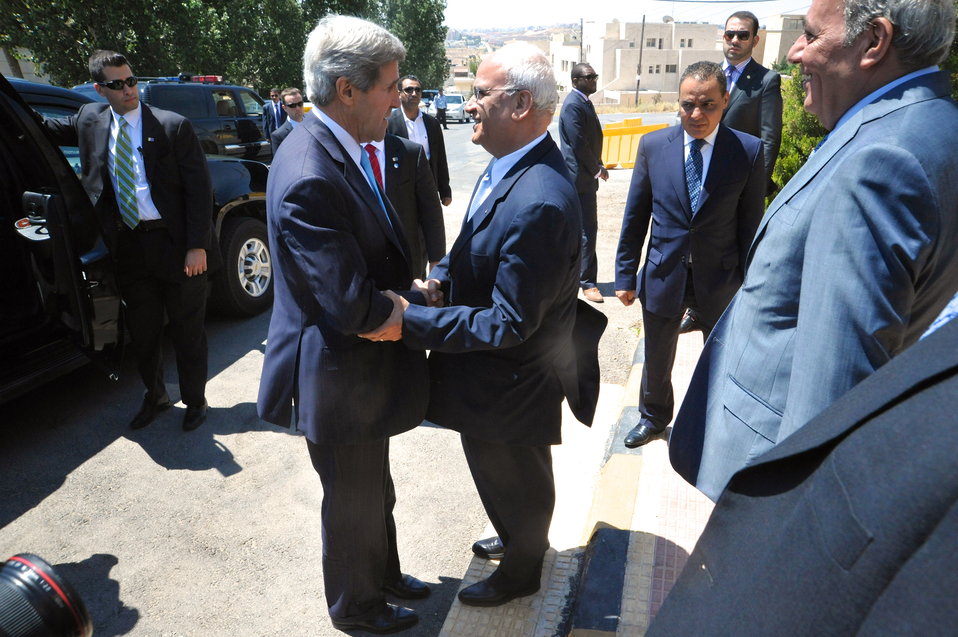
Secretary Kerry Meets With Palestinian Authority Negotiator Erekat

Palestinian Authority lead negotiator Saeb Erekat greets U.S. Secretary of State John Kerry as he arrives for a meeting with Palestinian Authority President Mahmoud Abbas in Amman, Jordan, on June 29, 2013.